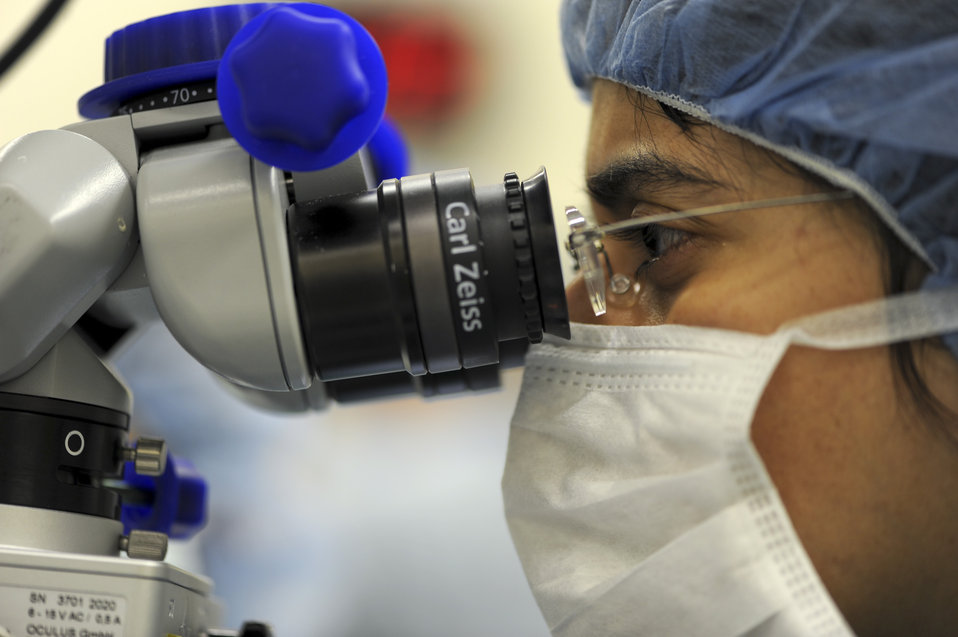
Ophthalmology surgeons employ cutting-edge technology

Maj. (Dr.) Vasudha Panday looks through a microscopic instrument as she performs corneal transplantation on Gloria Bolick Dec. 22, 2009, at Wilford Hall Medical Center at Lackland Air Force Base, Texas. Doctor Panday is assigned to the 59th Medical Wing.